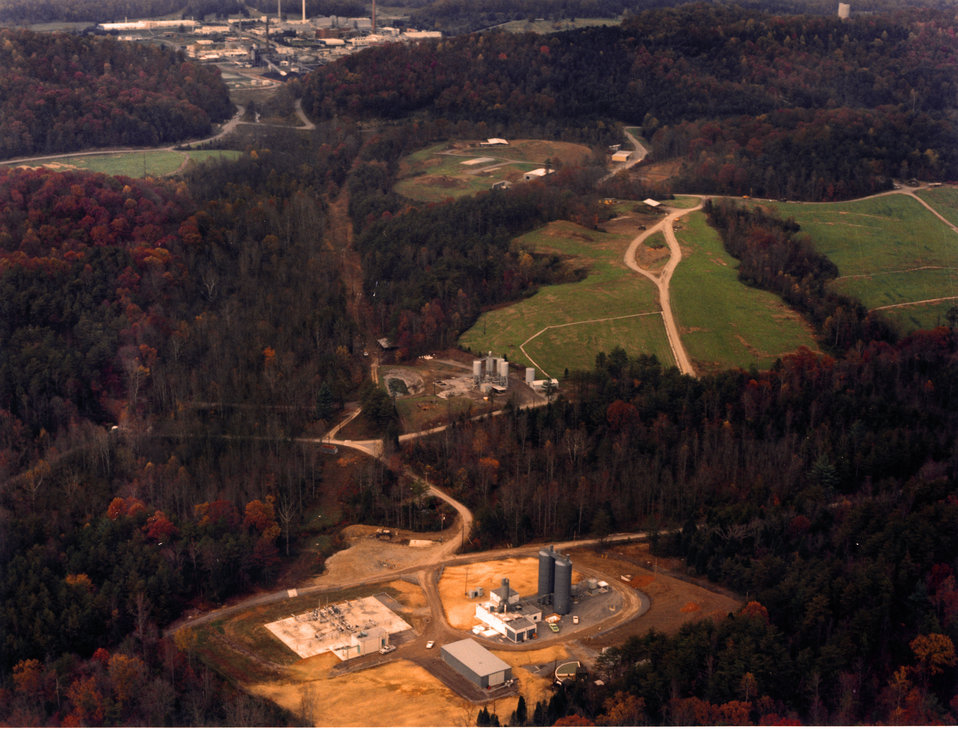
1981

Hydrofacture